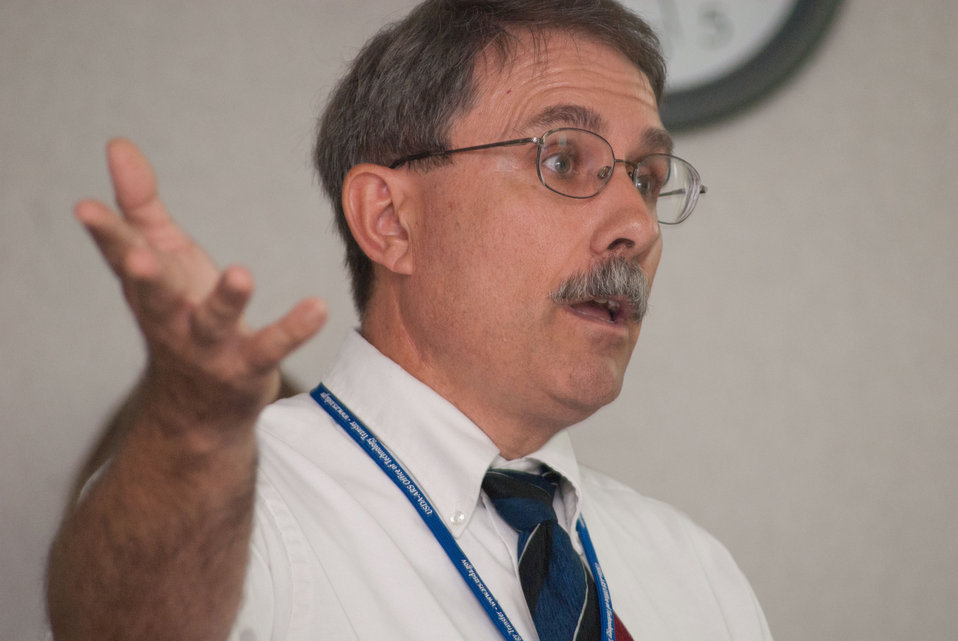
U.S. Department of Agriculture (USDA), Agriculture Research Service's (ARS) Rob Griesbach, spoke about ARS Office of Technology Transfer - Getting ARS Innovations Out to the People, and Into the Economy with the Afghan Ministry of Agriculture's Borlaug Fellows at the George Washington Carver Center, in Beltsville, MD on Wednesday Sep. 21, 2011.